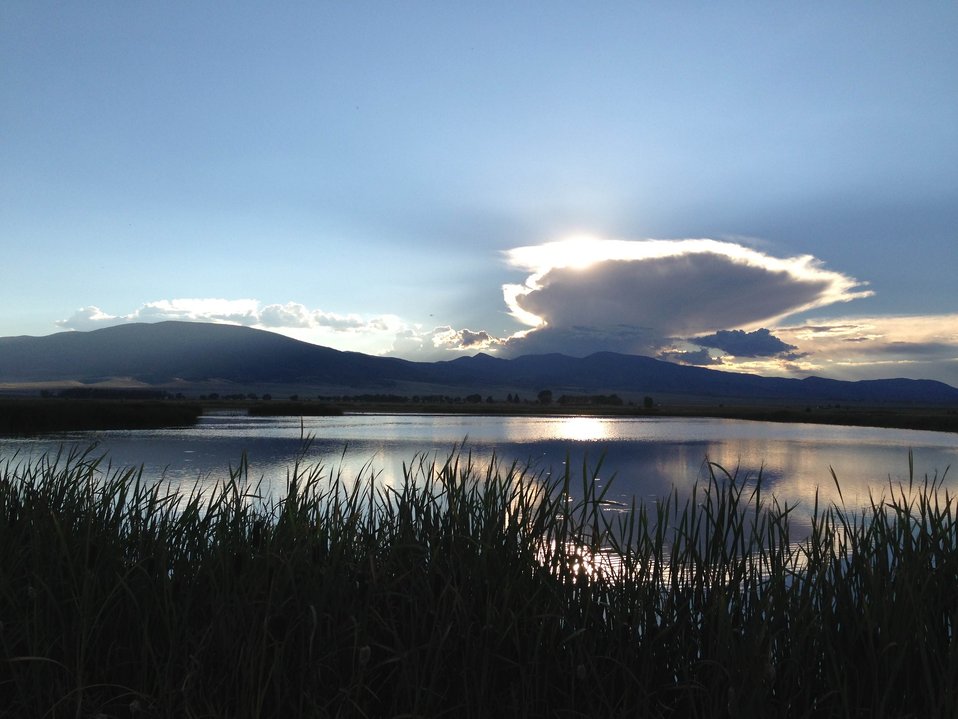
Monte Vista National Wildlife Refuge